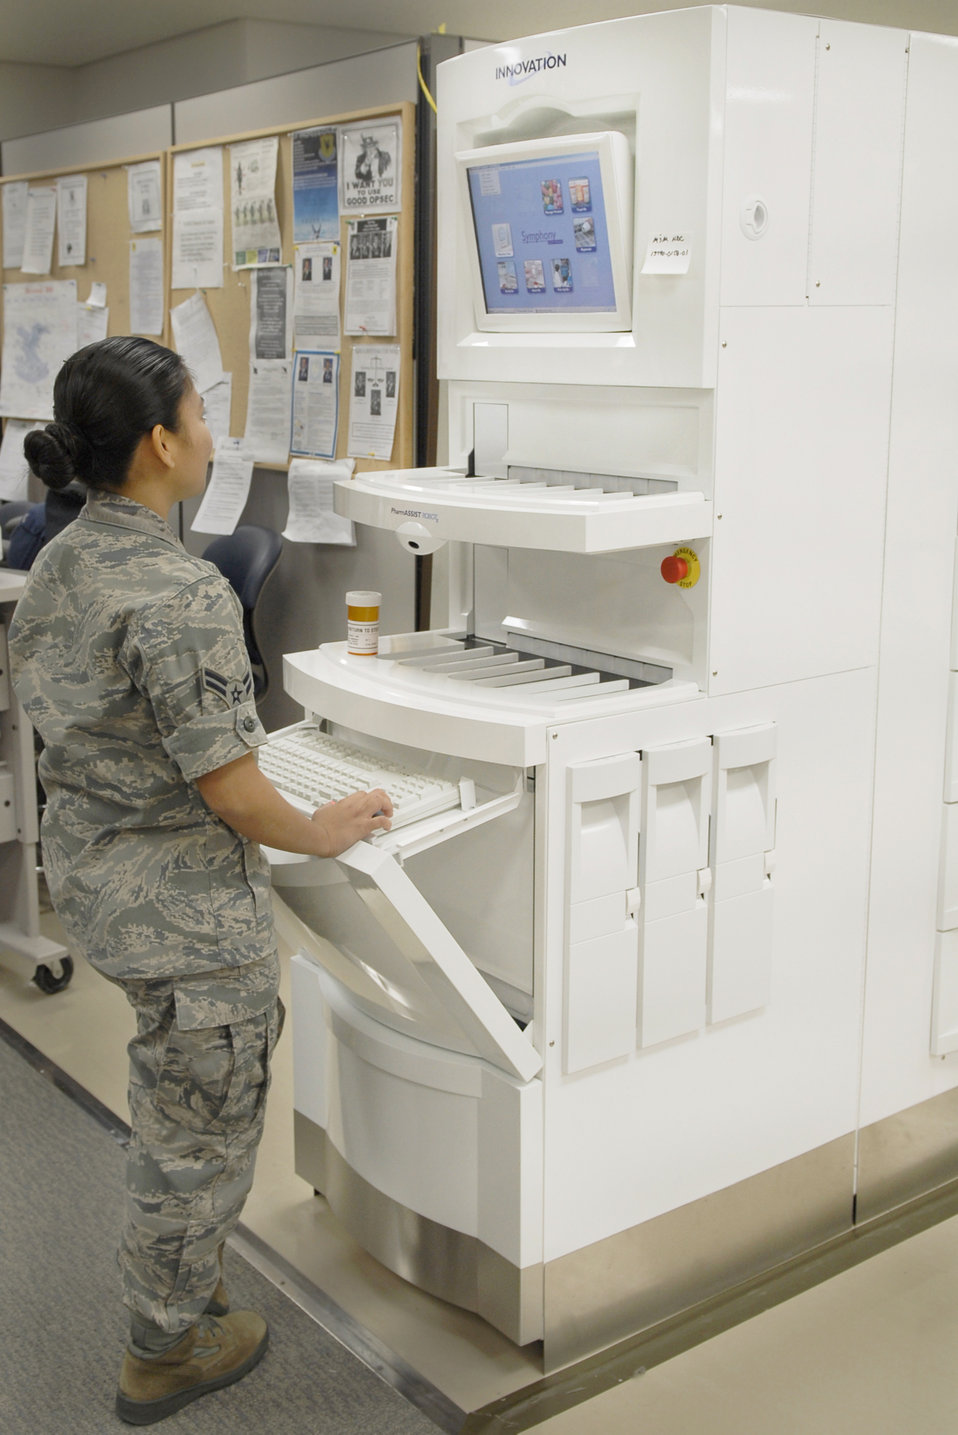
Kadena ROBOTx

Airman 1st Class Roma Terry begins running a check on the new pharmacy robot Dec. 10, 2010, at Kadena Air Base, Japan. The PharmASSIST ROBOTx has established quality checkpoints throughout the pharmacy by employing bar code scanning, digital images of medications and original paper prescriptions, and protocols at every stage of the prescription filling process. Airman Terry is a pharmacy technician with the 18th Medical Support Squadron.